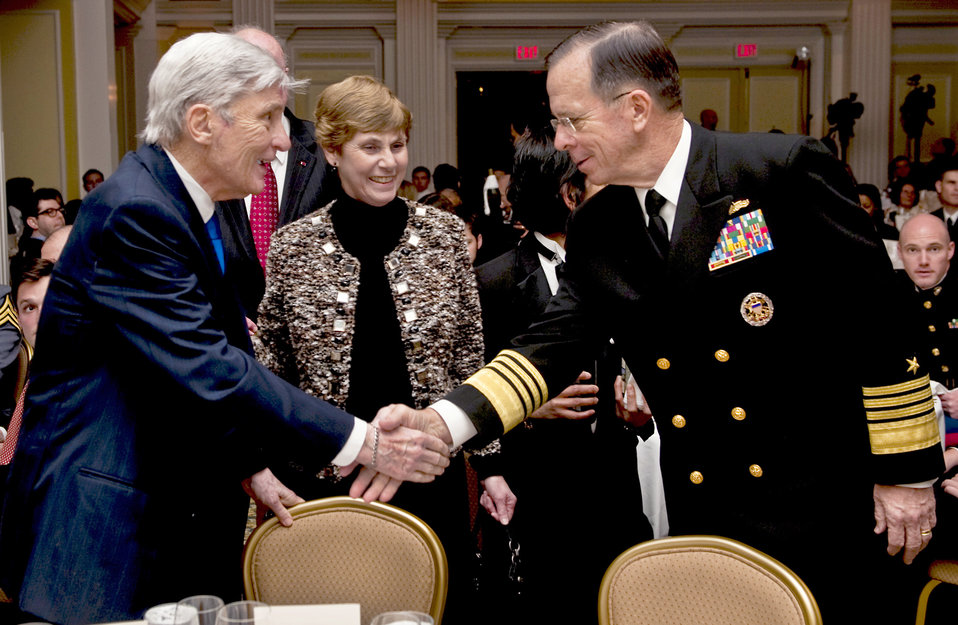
Mullen accepts award on behalf of armed forces

Navy Adm. Mike Mullen and his wife, Deborah, greet retired Sen. John W. Warner of Virginia at the Center for the Study of the Presidency and Congress awards dinner March 24, 2011, in Washington, D.C. Mullen accepted the Dwight D. Eisenhower Award for excellence on behalf of the U.S. Armed Forces at the dinner. Mullen is the chairman of the Joint Chiefs of Staff.